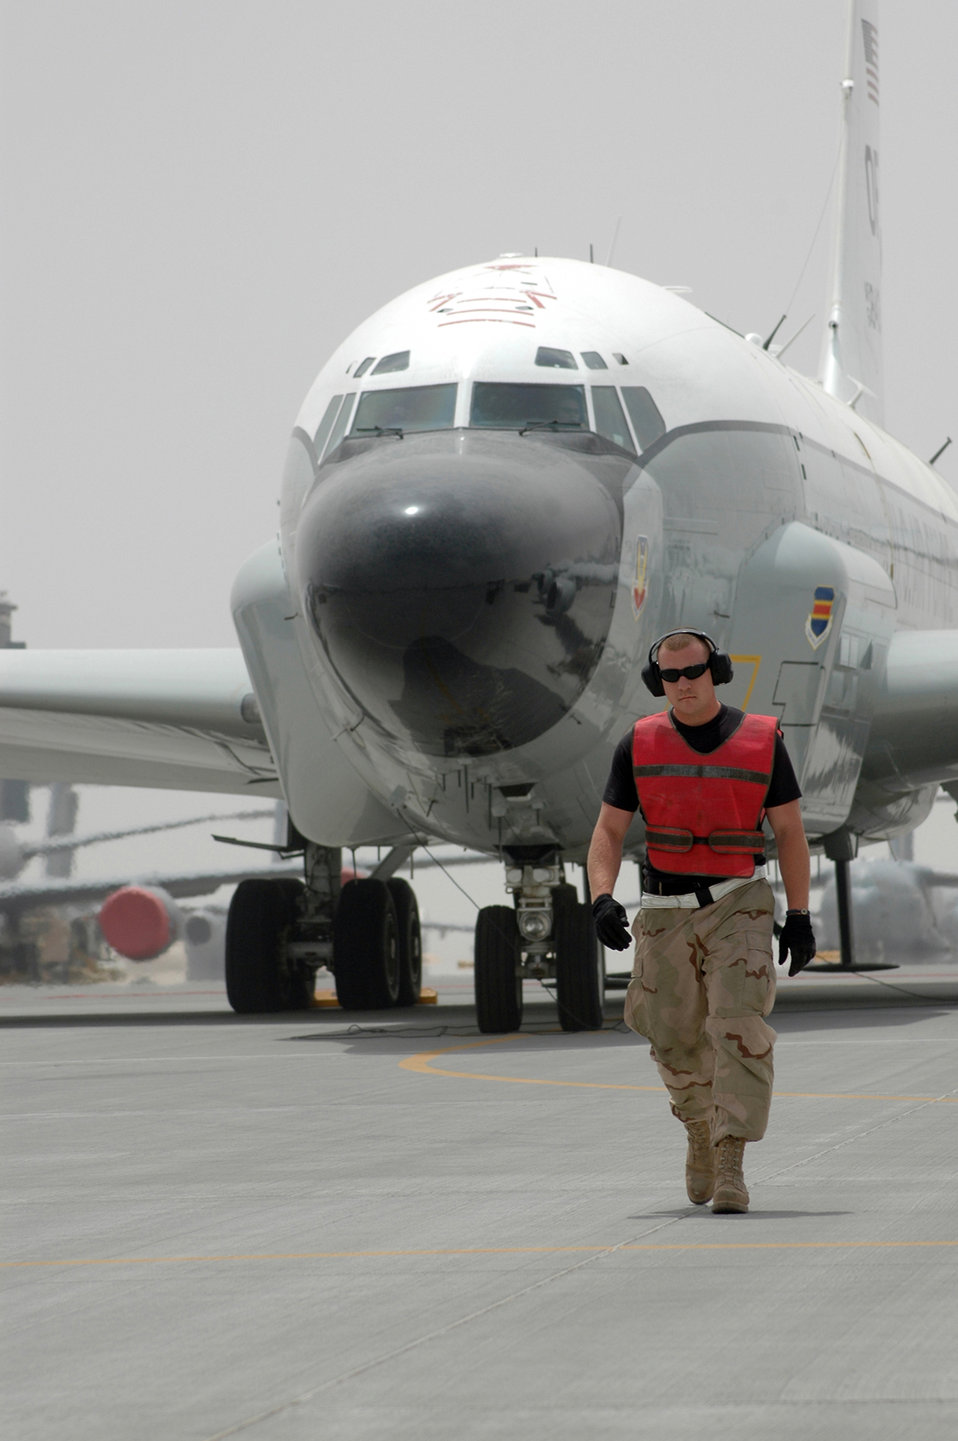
Airmen keep a step ahead of enemy

Staff Sgt. Cheyenne Bode, an electrical and environmental craftsman, walks out to marshal the RC-135 V/W Rivet Joint from its parking space April 4 for a mission in Southwest Asia. Sergeant Bode is assigned to the 379th Expeditionary Aircraft Maintenance Squadron's 55th Aircraft Maintenance Unit.